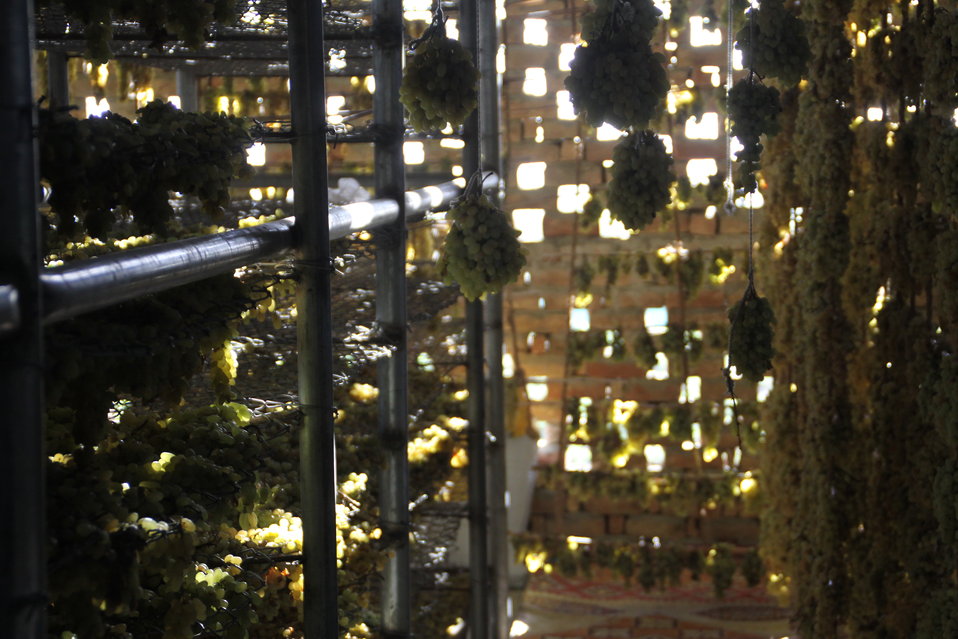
AVIPA Plus Wheat Seed Distribution 101005

US Ambassador Karl Eikenberry and USAID Acting Mission Director Kevin Brownawell joined the Minister of Agriculture, Irrigation and Livestock, H.E. Minister Mohammed Rahimi in signing a Memorandum of Understanding and distributing vouchers to area farmers for wheat and fertilizer.